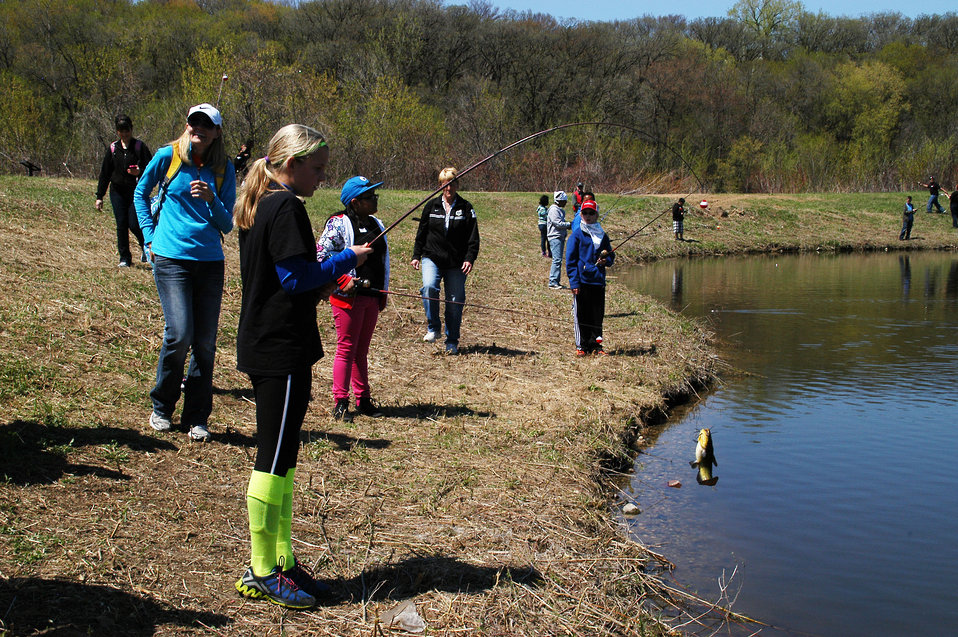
Last Catch of the Day!

Elementary student, Kara, catches the last Bullhead of the day!